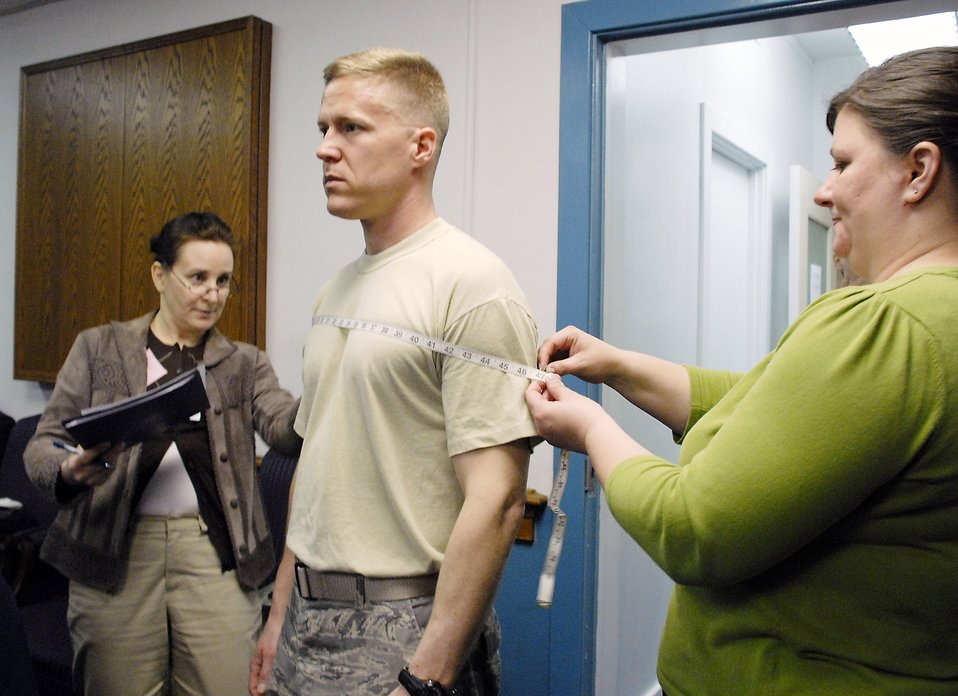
The heritage look

Lt. Col. Jeff Yocum gets measured during a heritage coat fit/wear test April 8 at the Pentagon. Measurements from various Airmen were collected by members of the Air Force Uniform Program Office so any fit adjustments can be made before the heritage service coats get field tested throughout the Air Force. Colonel Yocum is the Air Force chief of staff manpower and personnel executive officer.